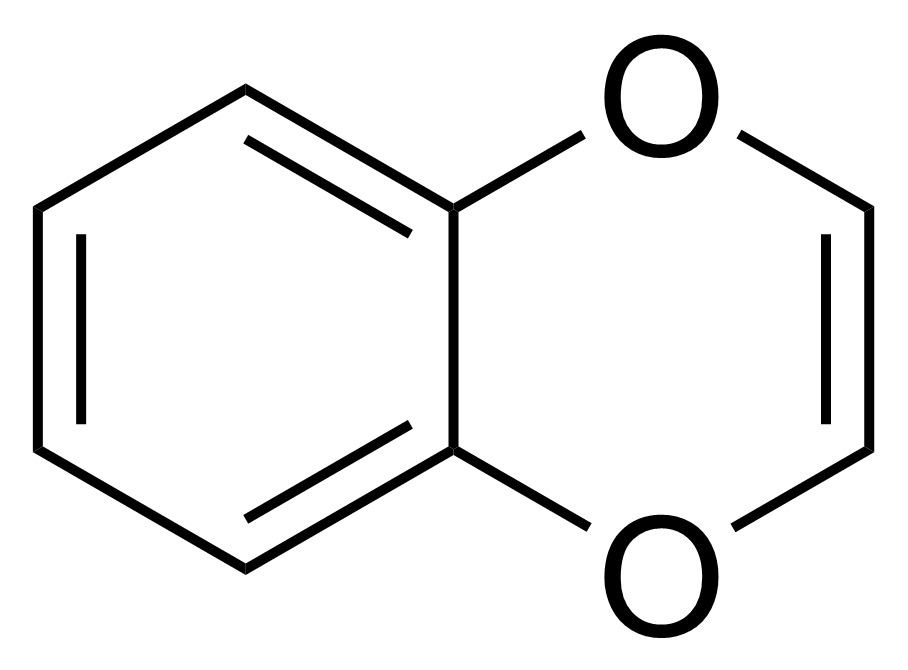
Structure of 1,4-benzodioxine